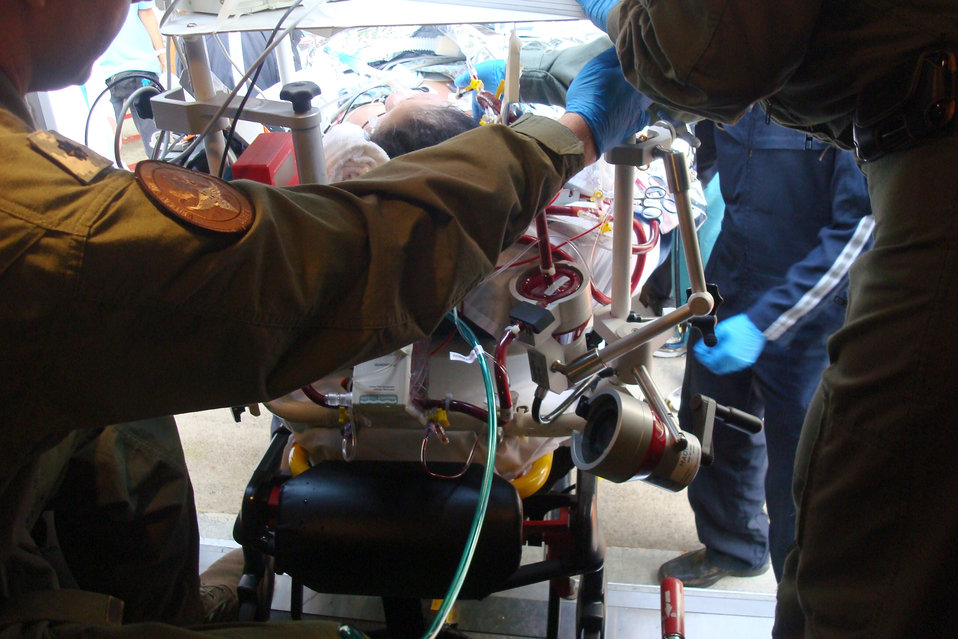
Joint-service, civilian ECMO team

A civilian patient being moved onto a Gulfstream III jet on the extracorporeal membrane oxygenation stretcher that her joint-service and civilian medical team constructed from scratch in November 2010. This, the longest adult ECMO transport ever recorded, took approximately 12 hours from the patient's Hawaii hospital bed to her Iowa hospital bed.